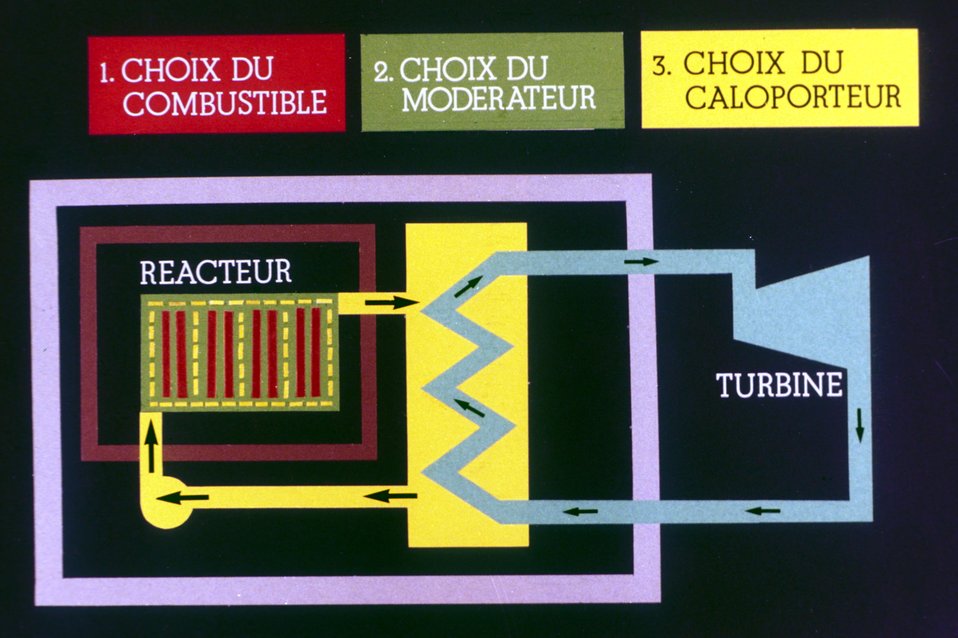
Les trois composants d'une filiÌre : combustible, modÐrateur, caloporteur.